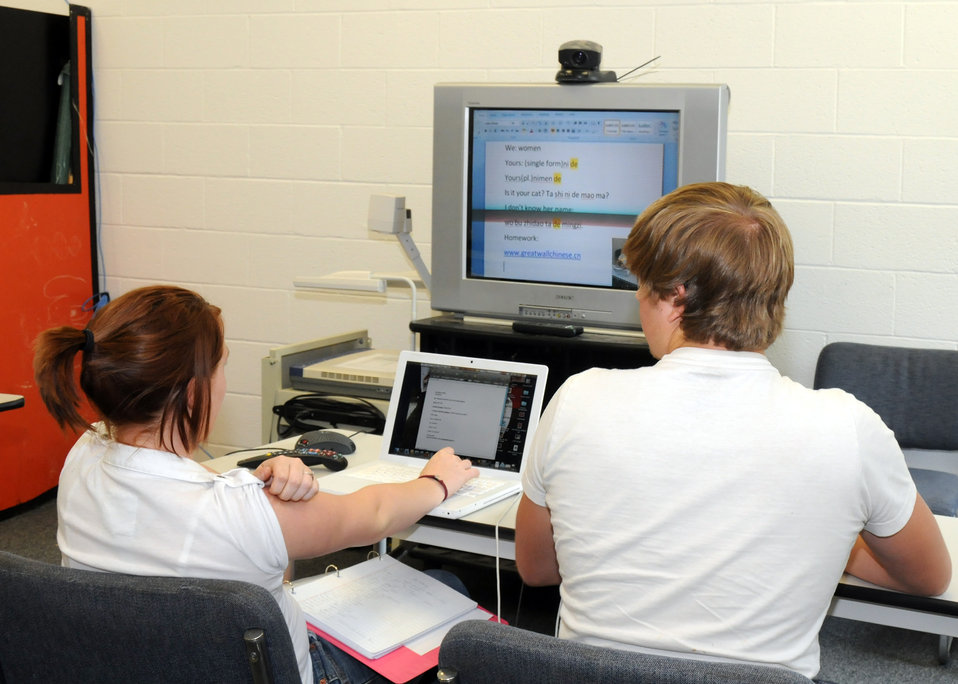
The students at Crescent High School in Crescent, Oklahoma are taking online courses in foreign languages, such as Chinese, due to the U. S. Department of Agriculture (USDA) Rural Development (RD) Distance Learning and Telemedicine Program (DLT) allocated through the American Recovery and Reinvestment Act of 2009 (ARRA).